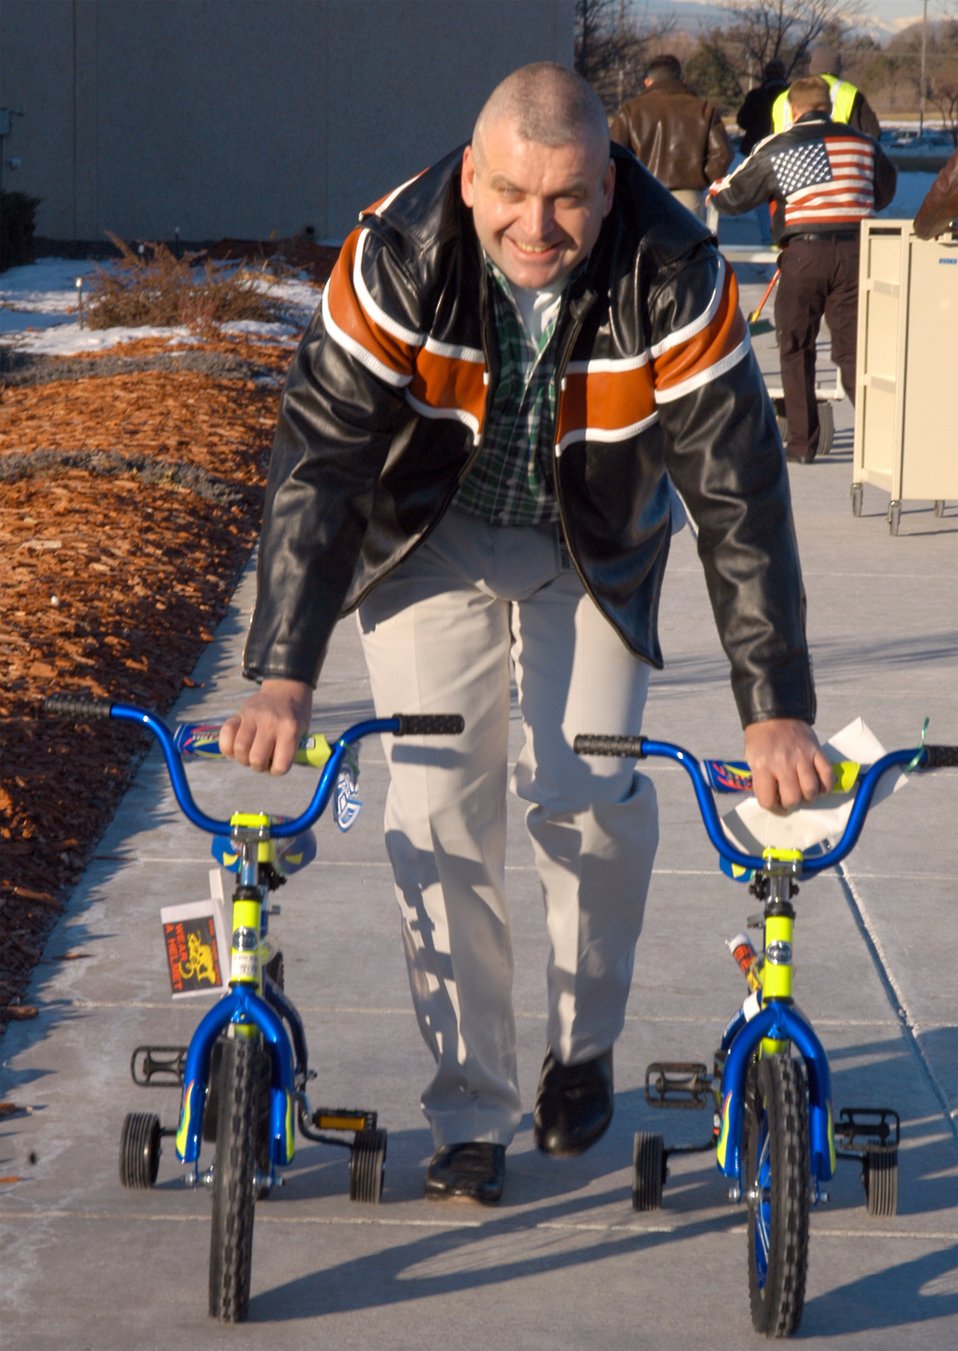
Top 3 donations

DENVER (AFPN) -- Senior Master Sgt. Lew Sutton helps load more than 100 donated presents to be delivered to less fortunate families. Sergeant Sutton is with the Air Reserve Personnel Center's health services directorate.